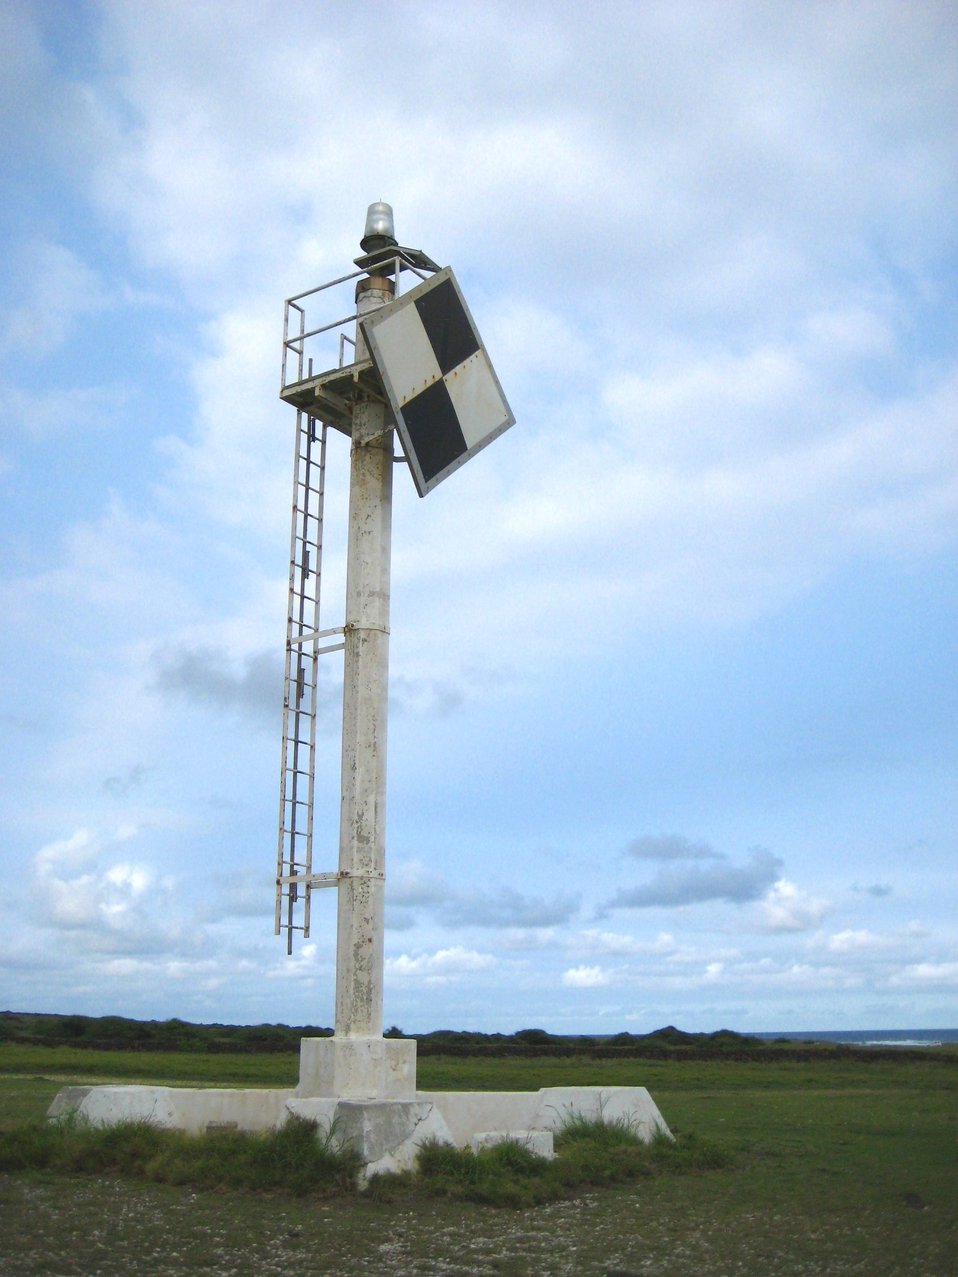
A navigational beacon